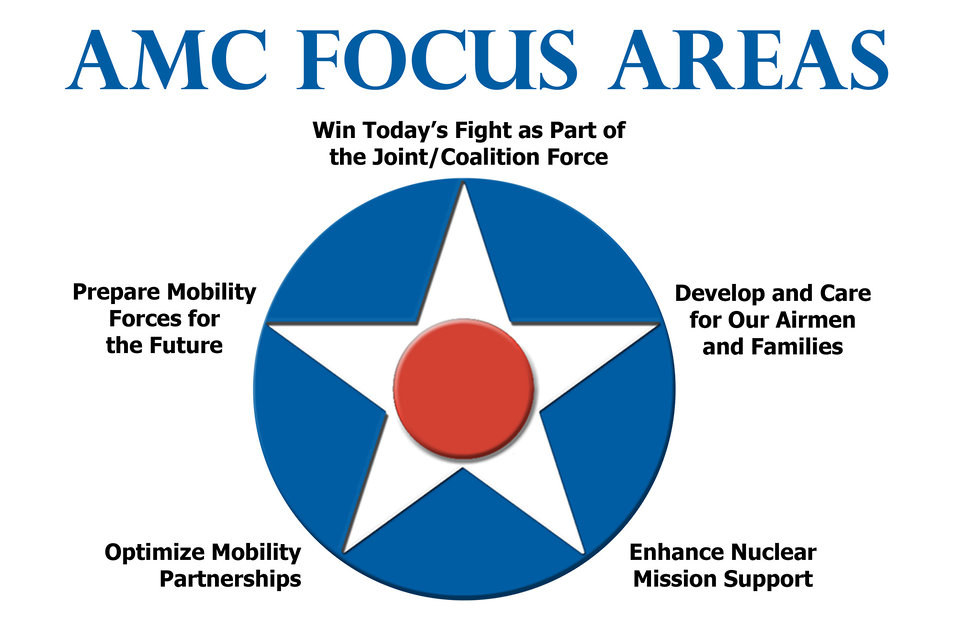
AMC Focus Areas Star

Air Mobility Command officials have expanded their focus areas to five, shown on the AMC Focus Area Star.